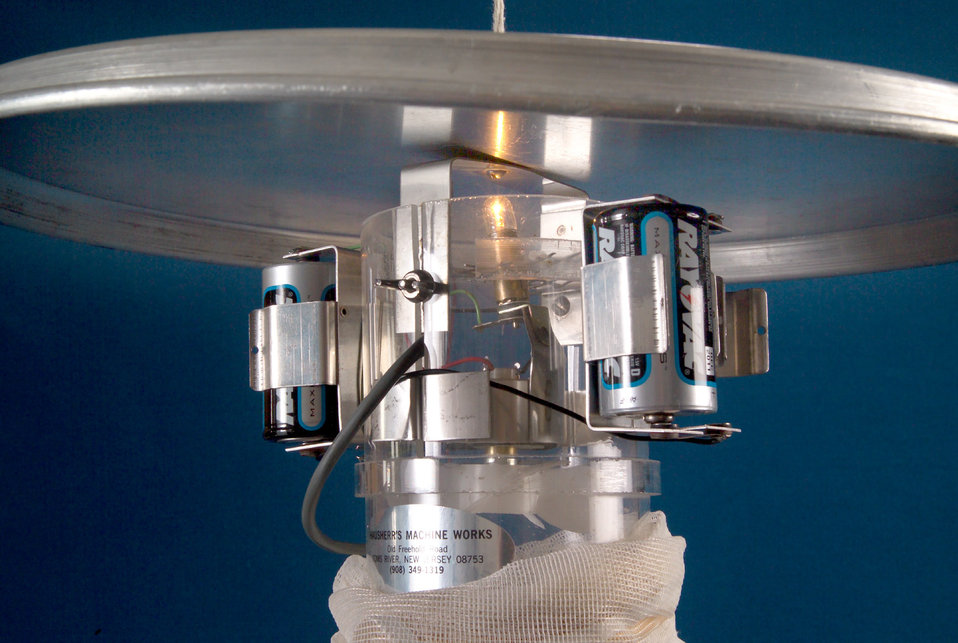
This is a close-up of the batteries used in a mosquito light trap to trap vectors to be tested for the presence of pathogens.